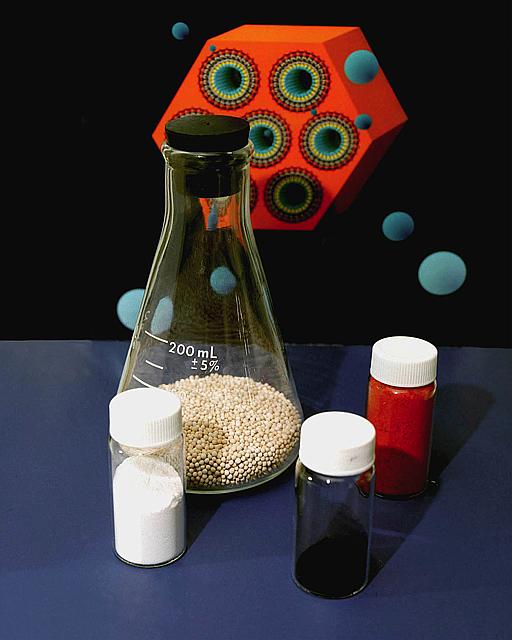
A VARIETY OF SELF-ASSEMBLED MONOLAYERS ON MESOPOROUS SUPPORTS (SAMMS) WITH A SCHEMATIC OF THE SAMMS STRUCTURE IN THE BACKGROUND.

SCIENTISTS AT PNNL DEVELOPED SAMMS TECHNOLOGY, A BREAKTHROUGH FOR REMOVING, RECOVERING, AND RECYCLING METALS FROM VIRTUALLY ANY ENVIRONMENT BY CAPTURING TARGETED METAL THROUGH A SOPHISTICATED BINDING PROCESS THAT CAN TRAP TOXIC MATERIALS. SAMMS MATERIALS CAN BE OBTAINED IN SEVERAL ENGINEERED FORMS, SUCH AS POWDERS AND BEADS AND CAN BE COATED WITH A VARIETY OF CHEMICALLY COATED ACTIVE COATINGS. THE COASTED SAMMS MATERIALS ARE USEFUL IN CATALYSIS, SEPARATIONS, AND CONTROLLED RELEASE APPLICATIONS.